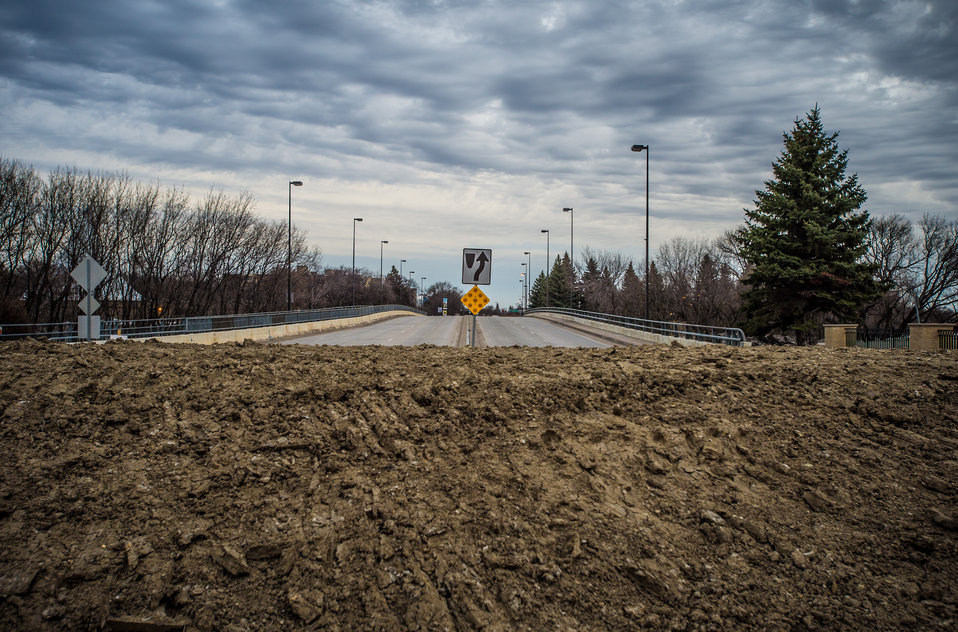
Temporary clay earthen dike at the intersection of 2nd St. N and 1st Ave. N. will prevent Red River flood waters (under the bridge beyond) from reaching the nearby city hall, in Fargo, N.D. on Monday, Apr. 29, 2013. To learn about the Red River Basin Initiative, see www.mn.nrcs.usda.gov/news/features13/RRBI.html.